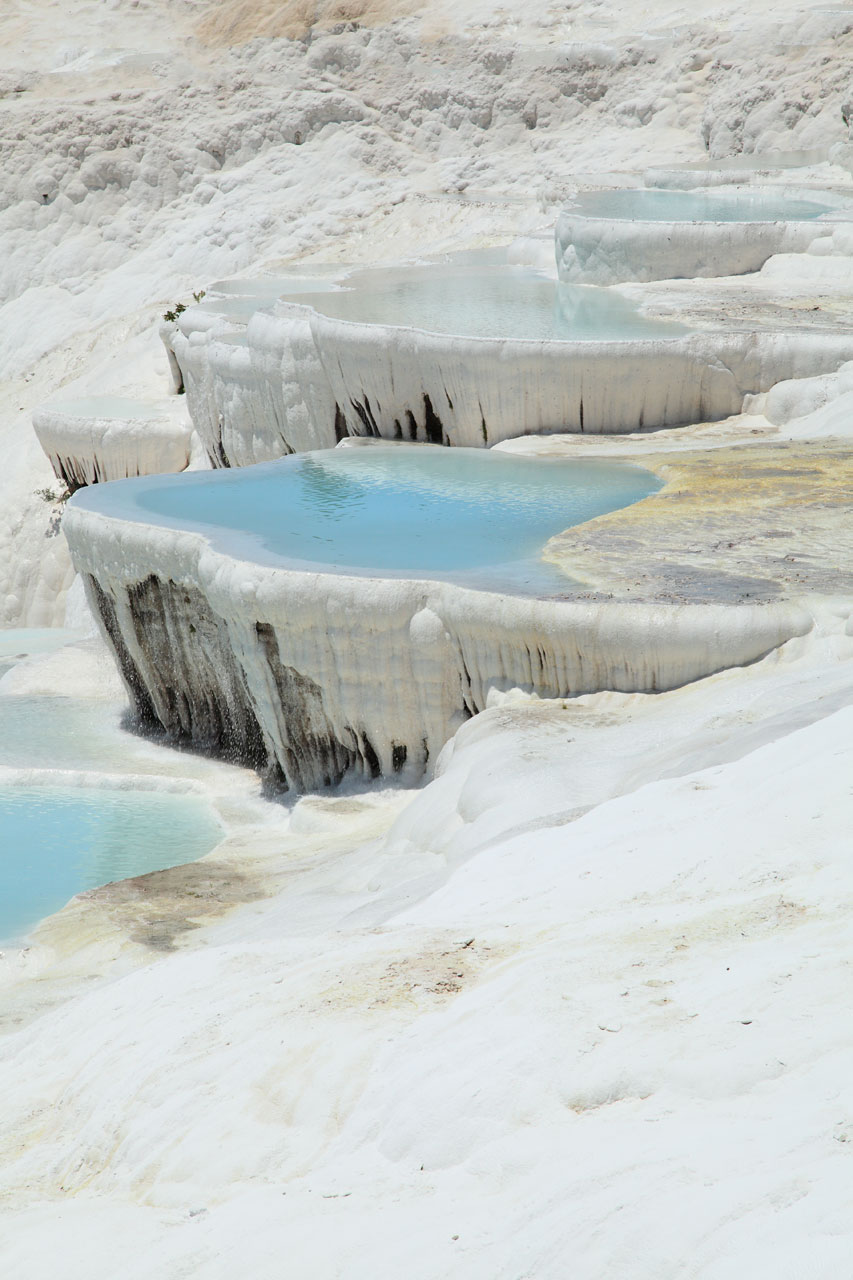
Pools in pamukkale

Pools made with calcium rich water in pamukkale - turkey.